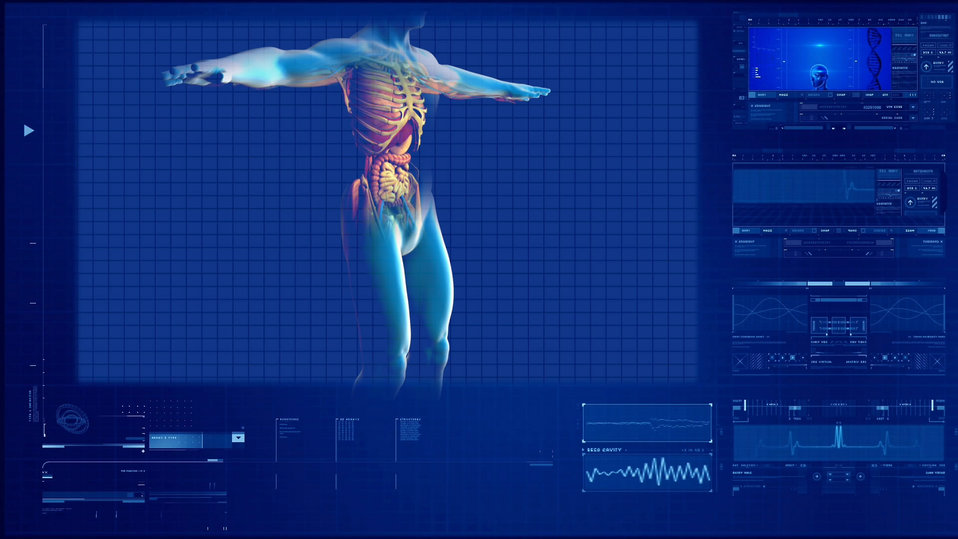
Human body with internal organs.